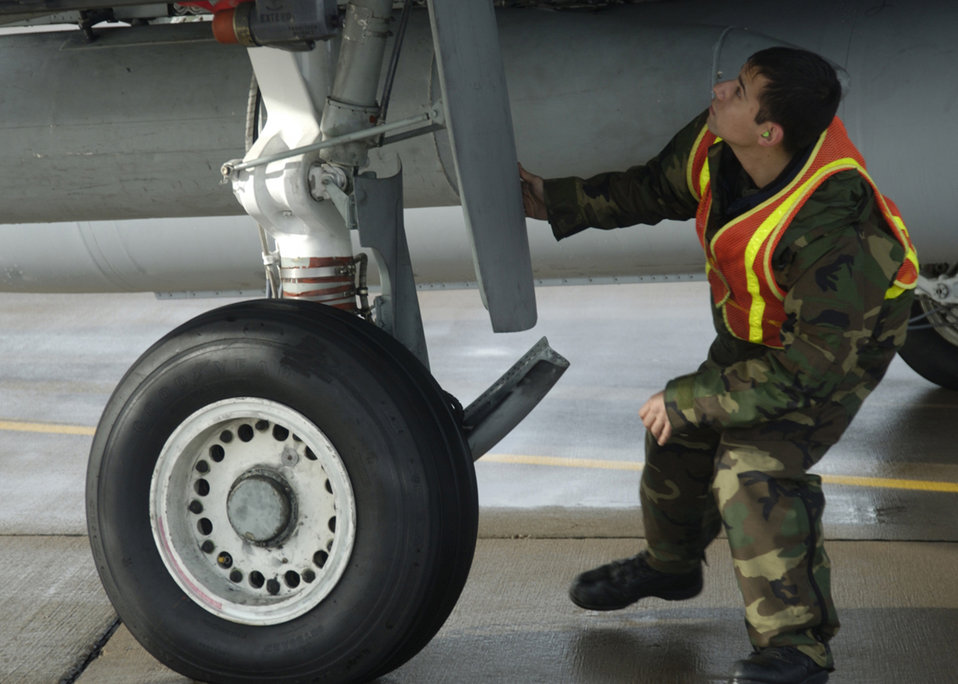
Check it 'n' bolt

DAVIS-MONTHAN AIR FORCE BASE, Ariz. -- Senior Airman Roger Osorio performs a last-minute maintenance check on an A-10 Thunderbolt II at the end of the runway as it prepares to take off here Feb. 12. Airman Osorio is with the 355th Aircraft Maintenance Squadron.